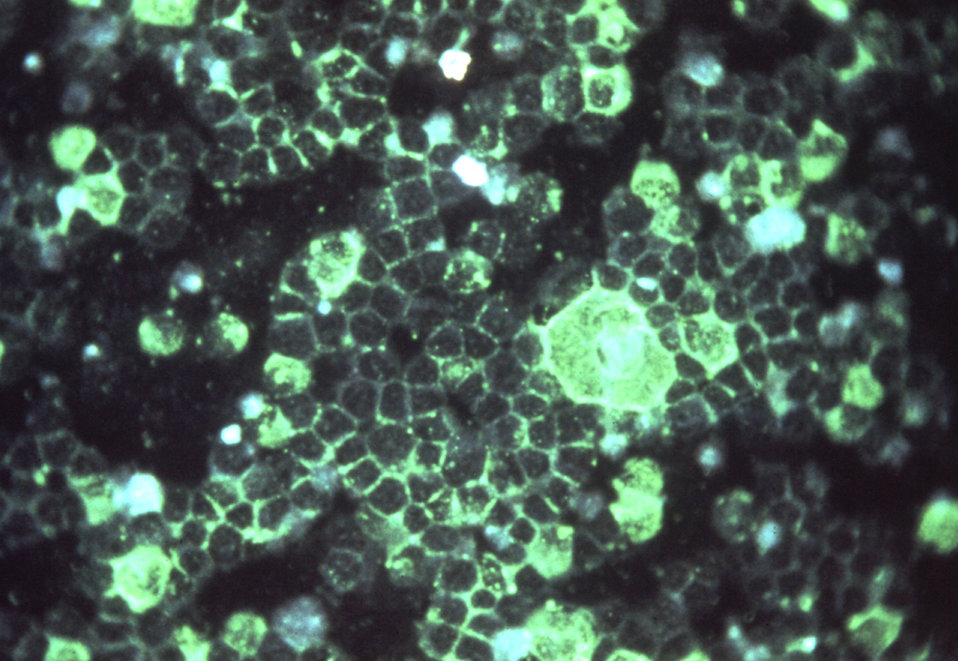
This is the photomicrographic detection of respiratory syncytial virus (RSV) using indirect immunofluorescence technique.